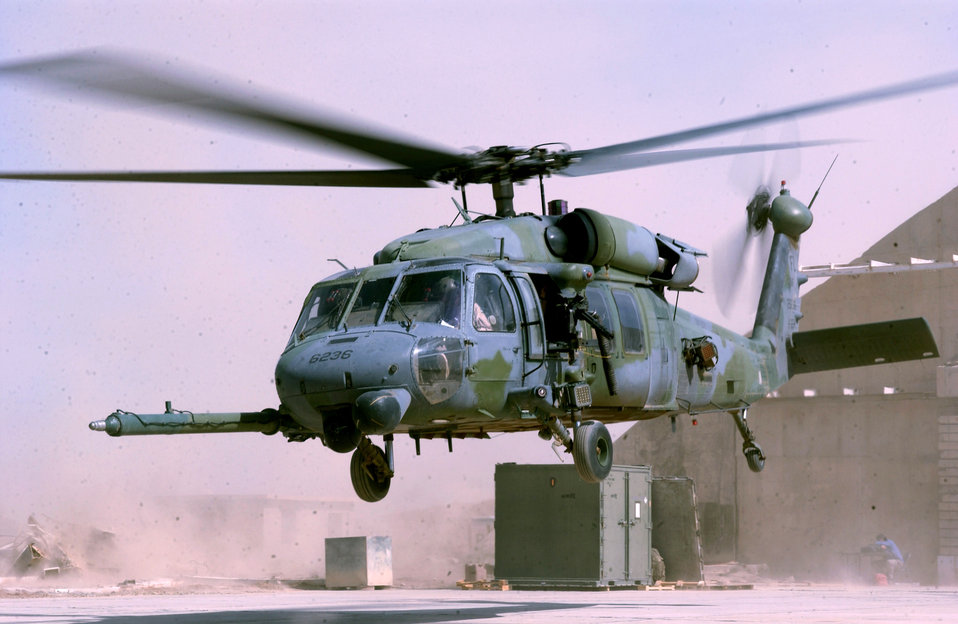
Pave Hawk lift off

OPERATION IRAQI FREEDOM -- An HH-60G Pave Hawk helicopter from the 301st Rescue Squadron lifts off on a mission April 3, at a forward deployed location in southern Iraq.